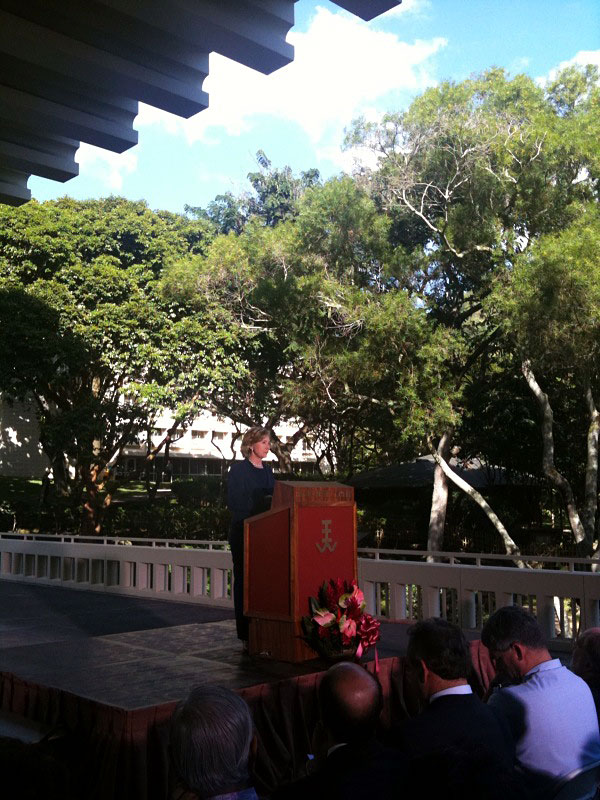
Secretary Clinton Delivers Remarks at East-West Center

U.S. Secretary of State Hillary Rodham Clinton delivers remarks at East-West Center, Honolulu, Hawaii, Jan. 12, 2010.